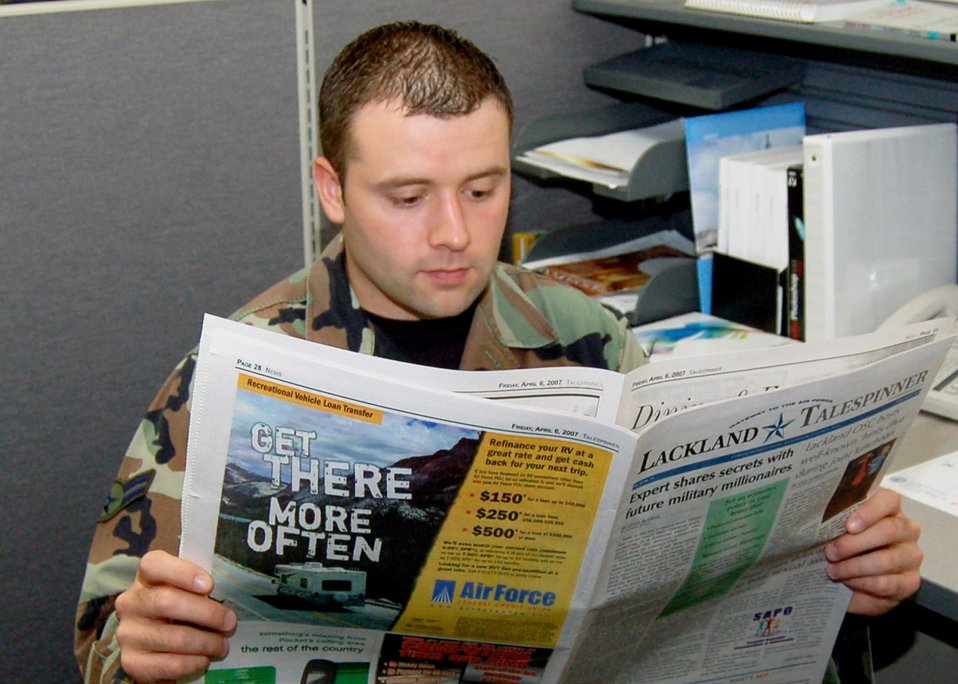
Best Air Force journalism announced

Air Force newspapers support command strategic themes and messages as do the many broadcast products. Recently, a panel of civilian journalists, teachers and public relations professionals selected the best in Air Force print and broadcast journalism at the 51st annual Air Force Media Contest.